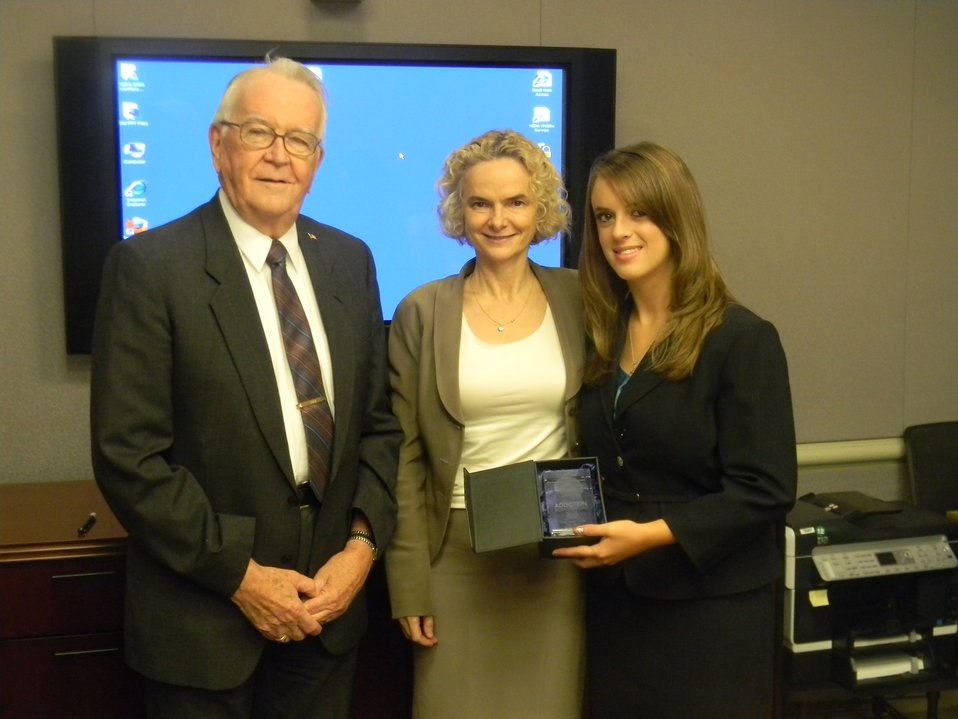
Friends of NIDA Dr. William Dewey, NIDA Director Dr. Nora Volkow and 3rd place 2012 ISEF award winner L. Elisabeth Burton